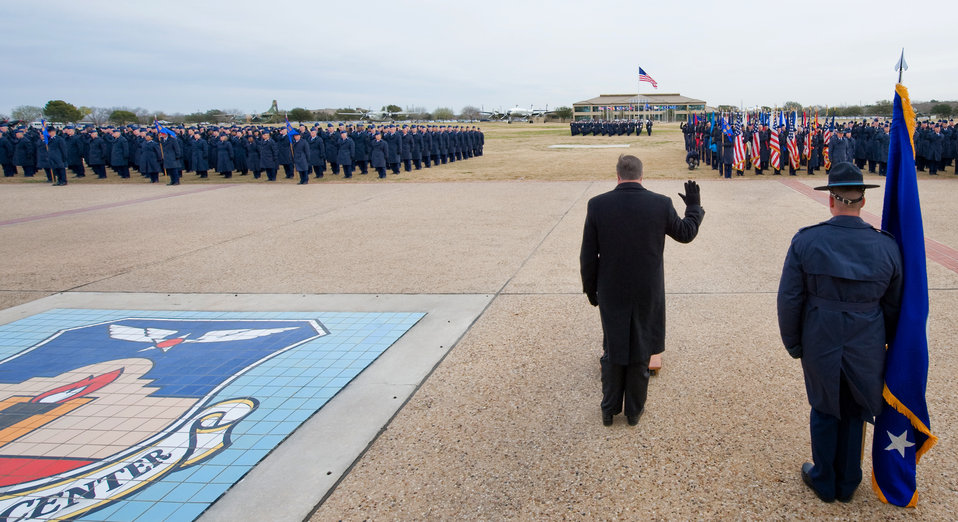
Air Force secretary visits Lackland, addresses priorities

Secretary of the Air Force Michael Donley officiates the oath of enlistment to graduates of Basic Military Training Jan. 8, 2010, at Lackland Air Force Base, Texas.